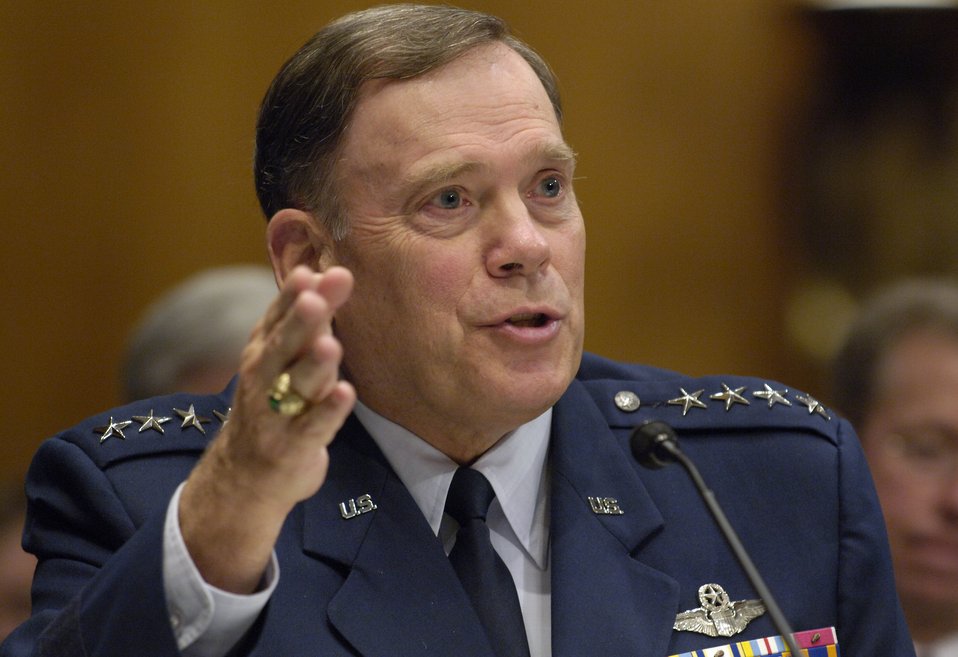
BRAC hearings

WASHINGTON -- Air Force Chief Of Staff Gen. John P. Jumper answers questions from members of the Base Realignment and Closure Commission during a hearing Aug. 20 on Capitol Hill. The commission called the hearing to give members of the Defense Department a final opportunity to present testimony before the commission's final deliberations concerning their BRAC recommendations to the president.